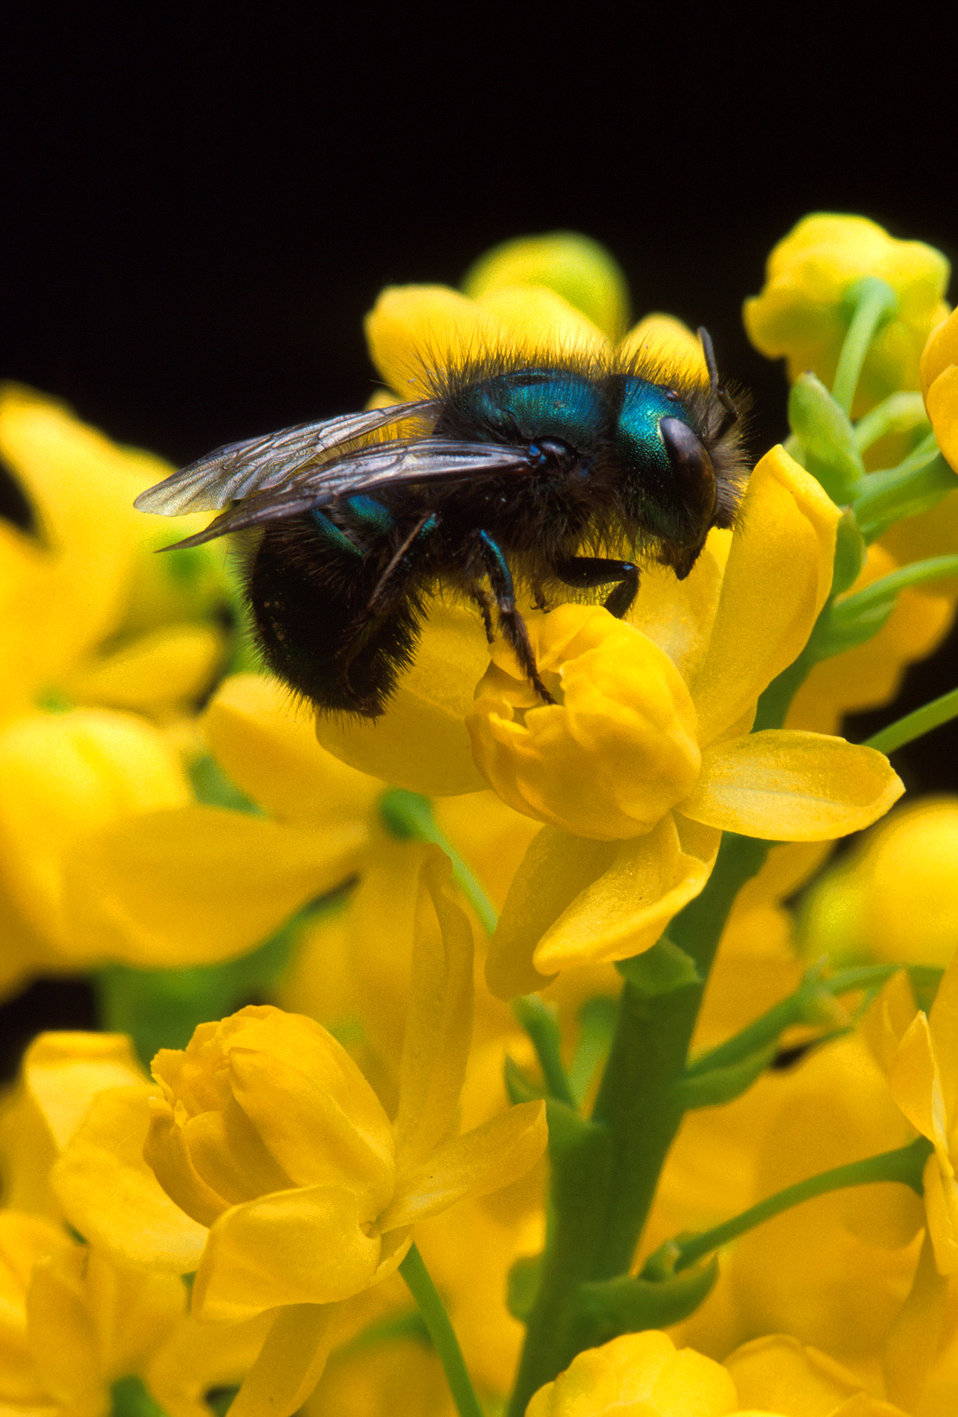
This bee (Osmia ribifloris) sitting on a barberry flower is an effective pollinator of commercial blueberries and is one of several relatives of the blue orchard bee, Osmia lignaria. Similar in appearance, the blue orchard bee is also a successful commercial pollinator that is now being evaluated for use in a wider range of crops.